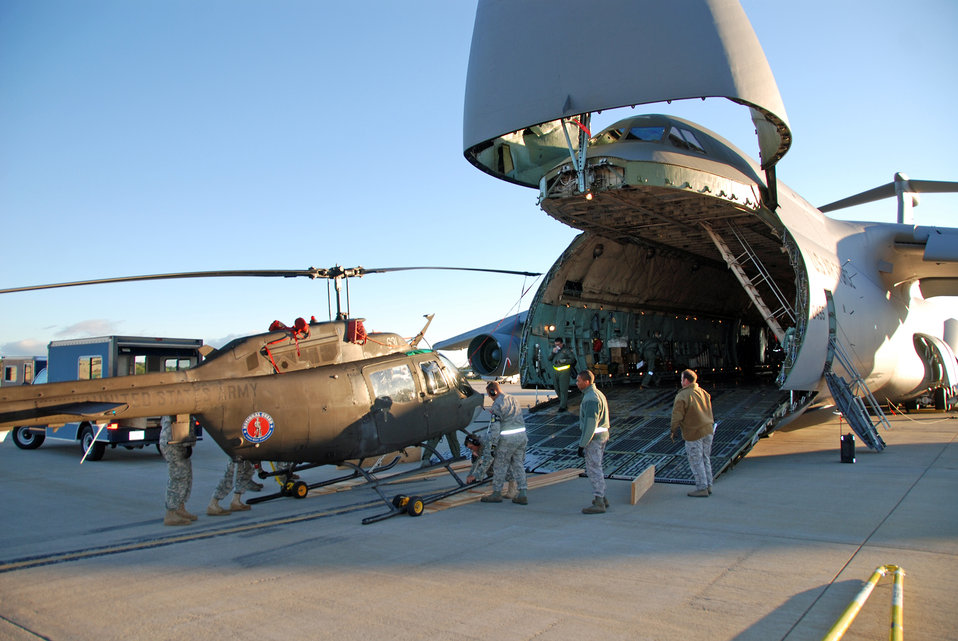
New York National Guard members participate in South African air show

New York Army National Guard Soldier unload an OH-58 Kiowa Sept.17, 2010, at Cape Town International Airport, South Africa, from a C-5 Galaxy.